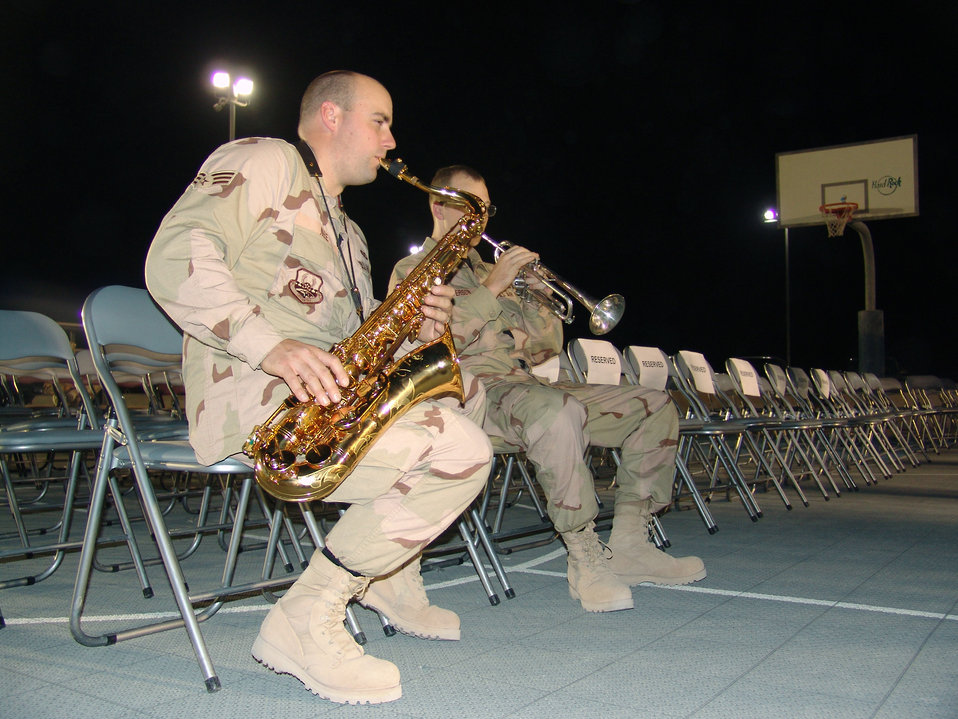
Strike up the band

SOUTHWEST ASIA -- Senior Airman Jeremy Nee (left) and Senior Airman Benjamin Peterson warm up before a performance at a forward-deployed location here. Air Force bandsmen are deployed throughout the Central Command area to help boost morale, provide entertainment and bring a little bit of home. Airmen Nee and Peterson are assigned to the U.S. Air Force Band of Mid-America.